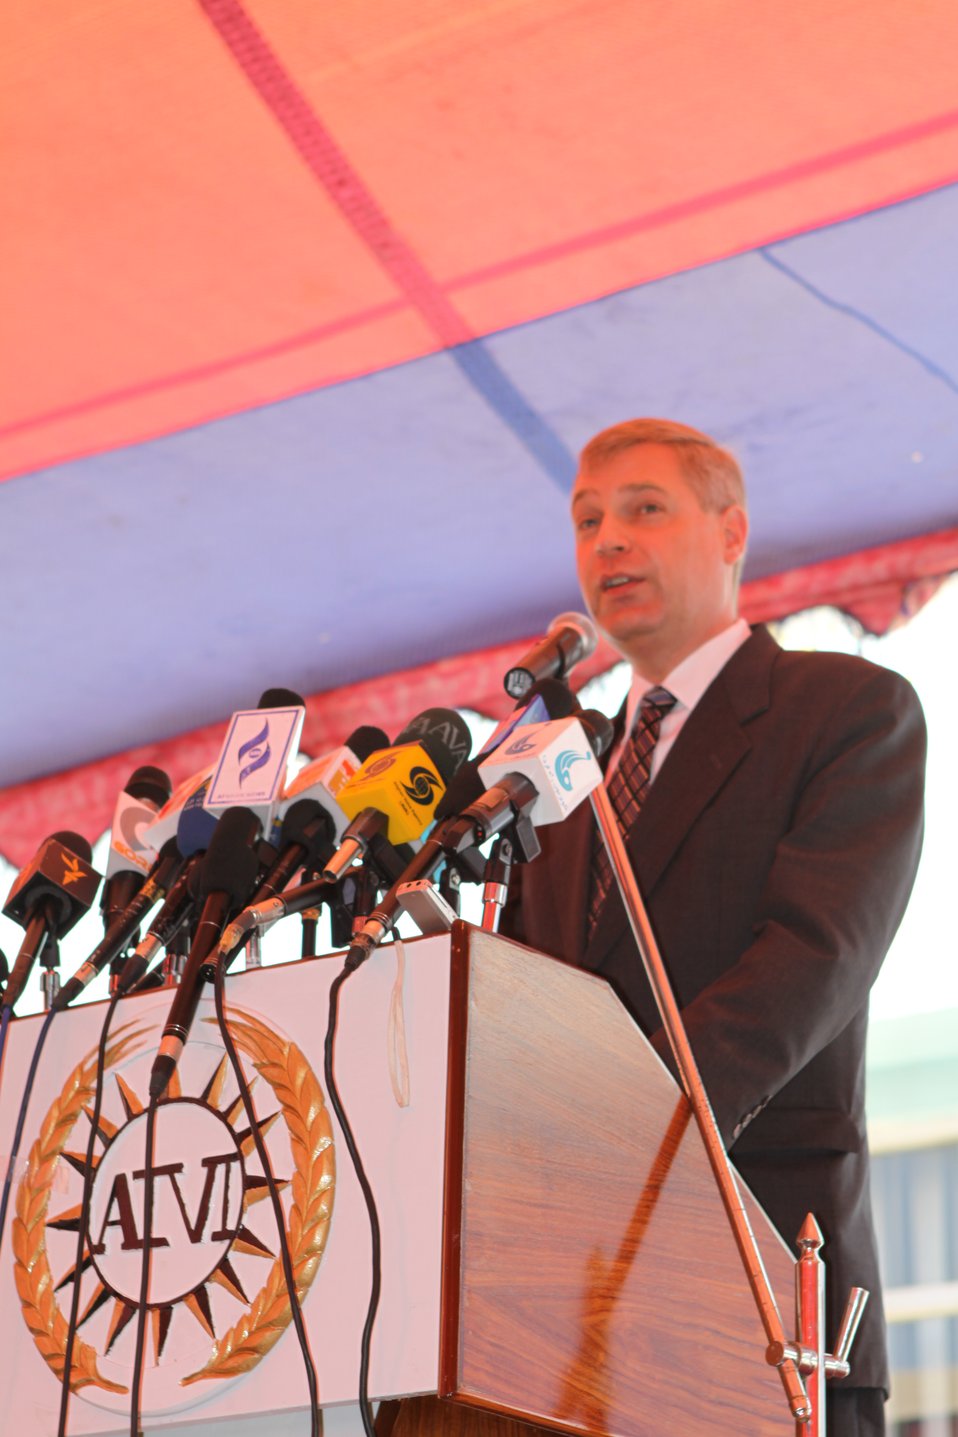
100522 ATVI Graduation 105